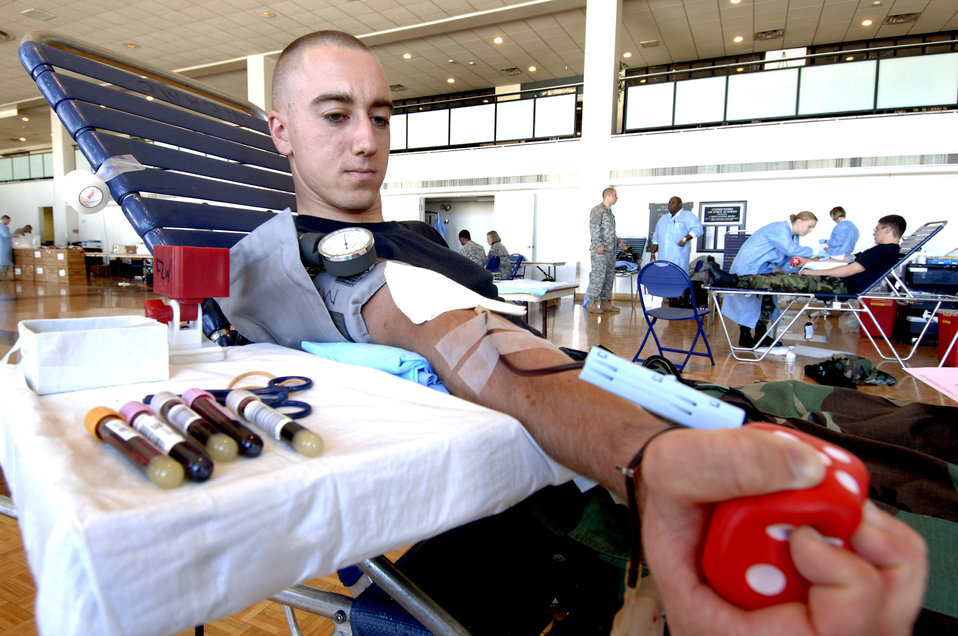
Giving the gift of life

Cadet 2nd Class Nathaniel Nocalis donates blood during a blood drive held in the Arnold Hall ballroom Sept. 19 at the U.S. Air Force Academy in Colorado. Blood collected will benefit armed forces members by helping to meet the urgent needs of wounded Americans in Iraq and Afghanistan.